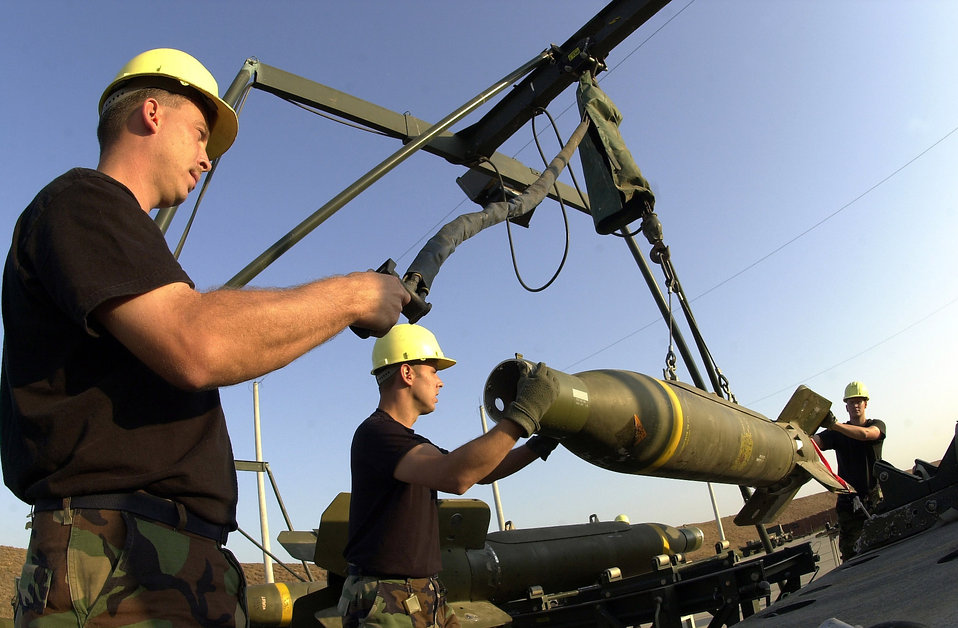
Munitions assembly

INCIRLIK AIR BASE, Turkey -- Tech. Sgt. Glenn Swaerengin, Staff Sgt. William Harford and Staff Sgt. Jason Harre all deployed to the 39th Maintenance Squadron munitions flight at Incirlik, upload a GBU-24 from a munitions assembly conveyor to a munitions trailer for transport to the flightline.